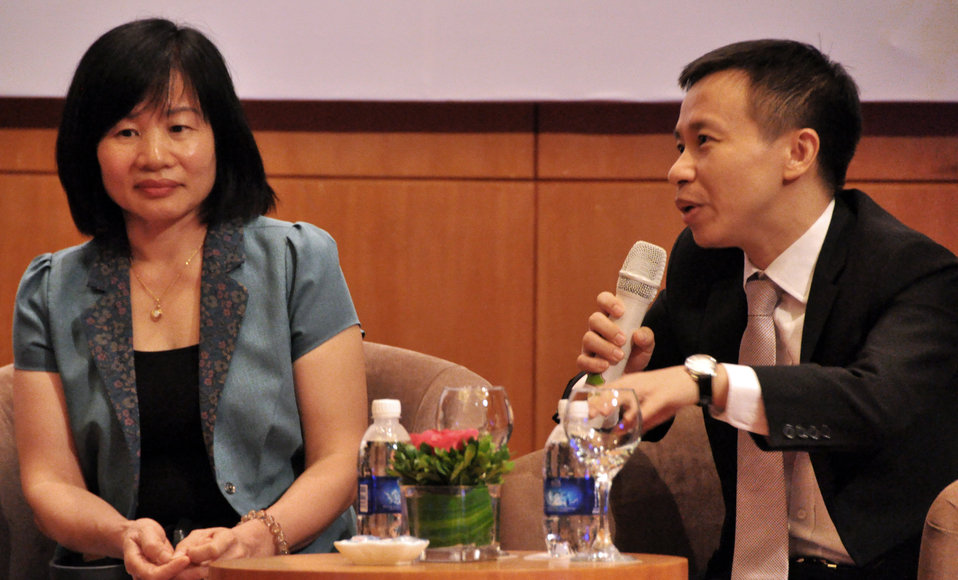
USAID's Support for Trade Acceleration Project (USAID STAR Plus) Closing Ceremony

Hanoi, August 26, 2013.